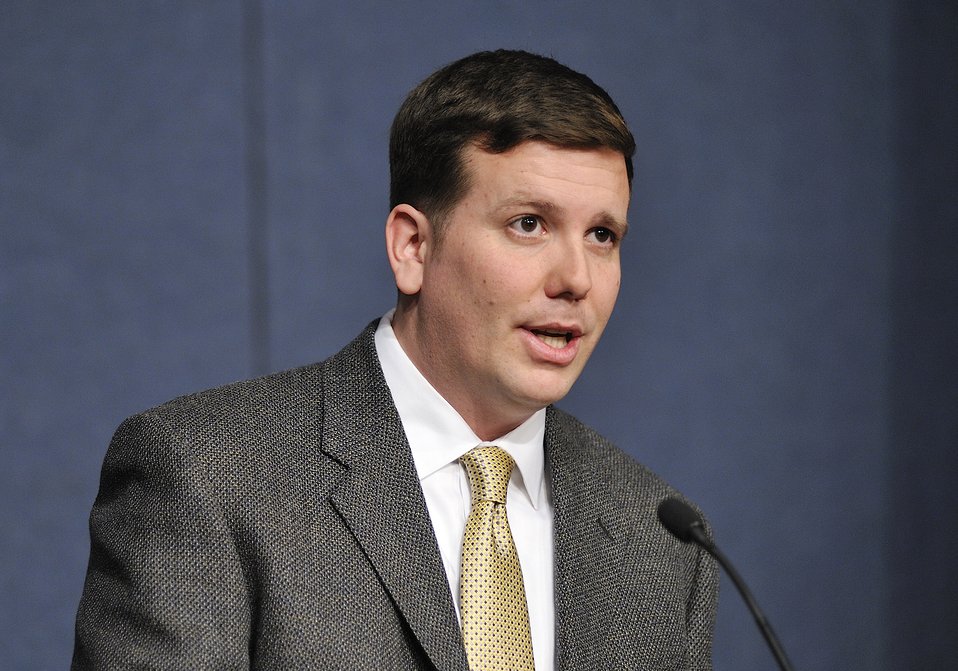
Martin Luther King Jr. Day Celebration at DOE headquarters.